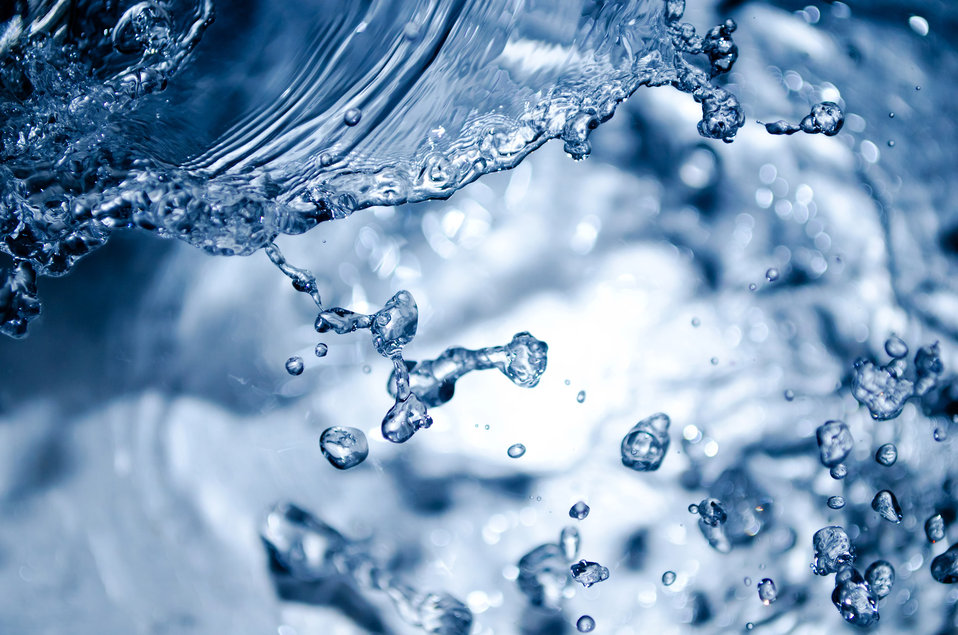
Water

Splash water - background.